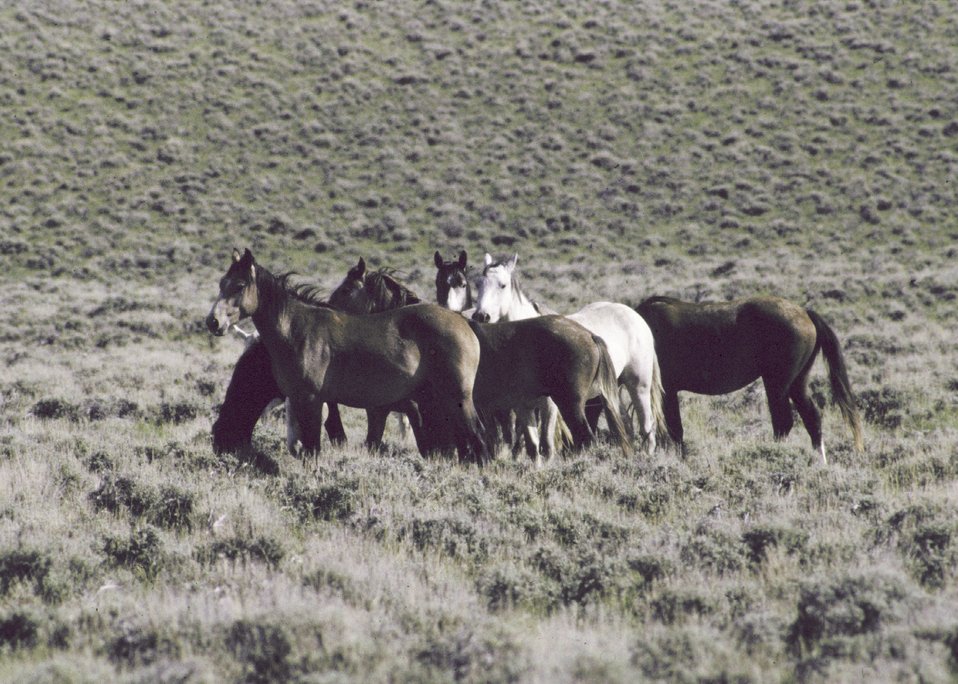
Wyoming wild horses grazing on public lands.